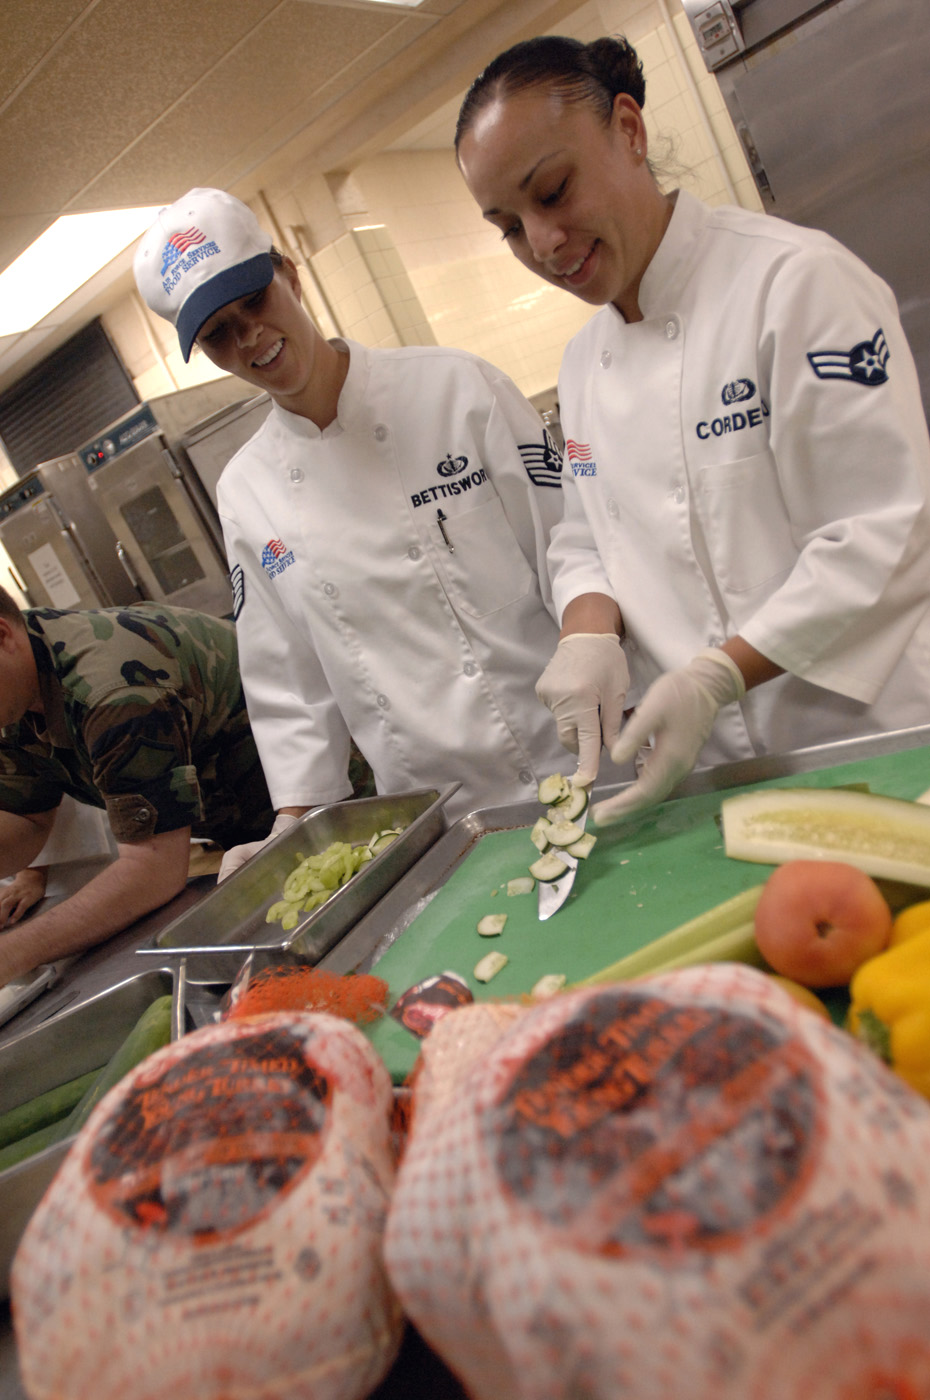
Festive preparations

ANDERSEN AIR FORCE BASE, Guam (AFPN) -- Tech. Sgt. Tiffany Bettisworth (left) and Airman 1st Class Melissa Cordero make vegetable show pieces for the Thanksgiving festivities here. They are assigned to the 36th Services Squadron.